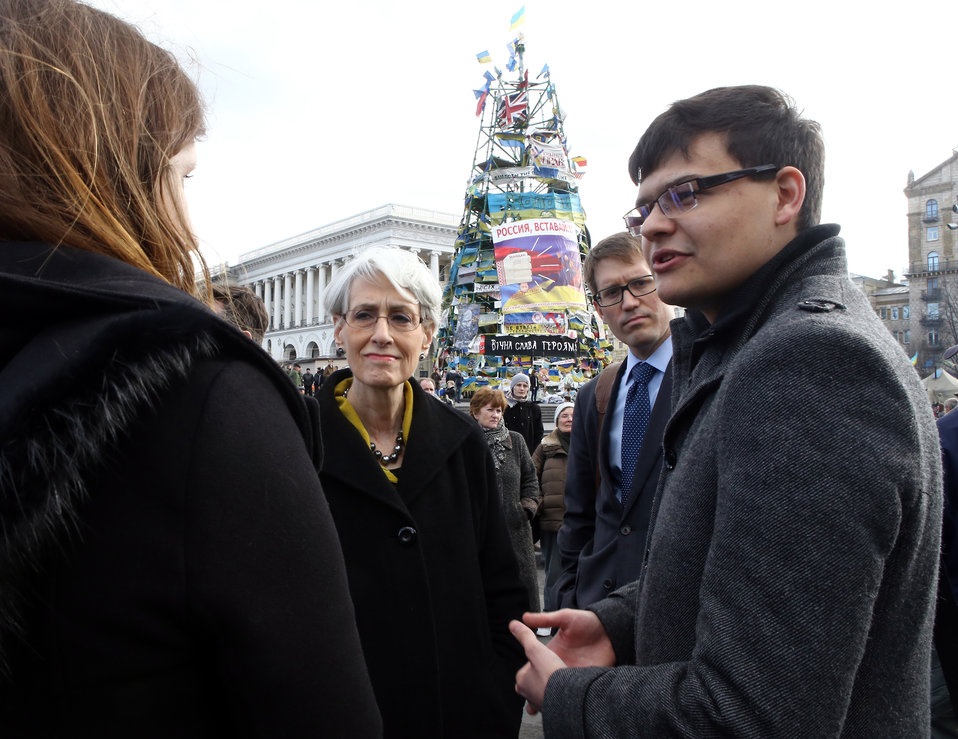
Under Secretary Sherman Meets With Civil Society Representatives in Kyiv

Under Secretary of State for Political Affairs Wendy Sherman meets with representatives of civil society in Kyiv, Ukraine, on March 20, 2014.